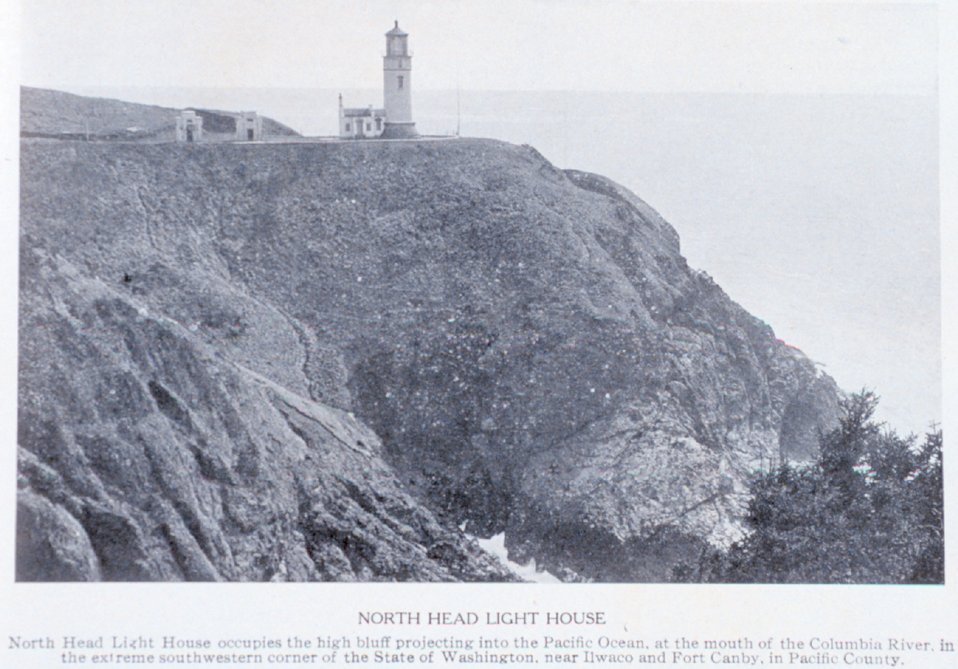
'North Head Light House'. In: 'Puget Sound and Western Washington Cities-Towns Scenery', by Robert A. Reid, Robert A. Reid Publisher, Seattle, 1912. P. 181.